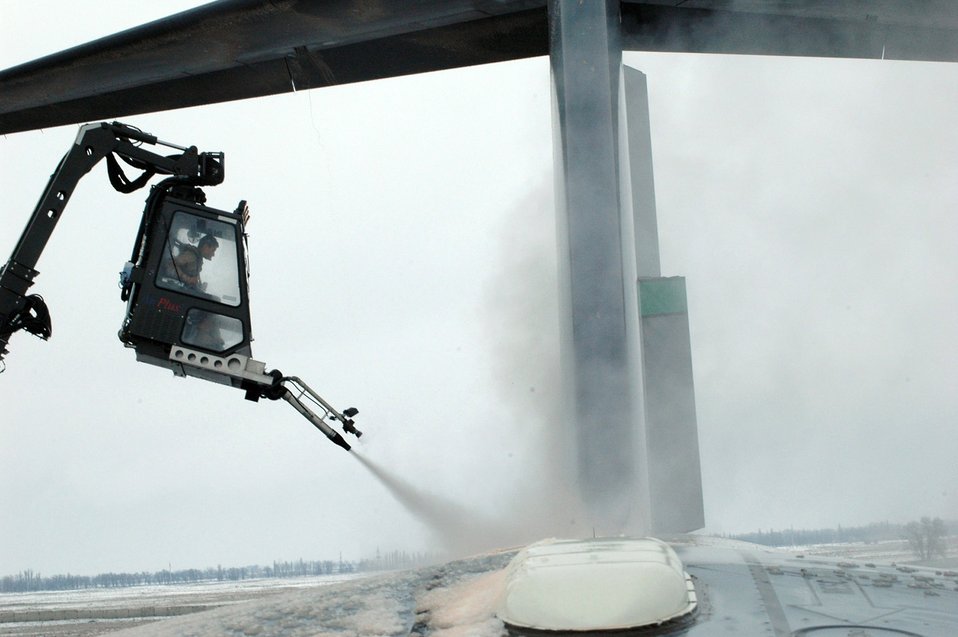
Ice is not nice

Airman 1st Class David Rosas de-ices a C-17 Globemaster III Feb. 20 prior to an airlift mission. Airman Rosas' de-icing cabin is suspended from the end of a 80-foot lift truck. He is with the 817th Expeditionary Airlift Squadron and is deployed from the 62nd Aircraft Maintenance Squadron at McChord Air Force Base, Wash.